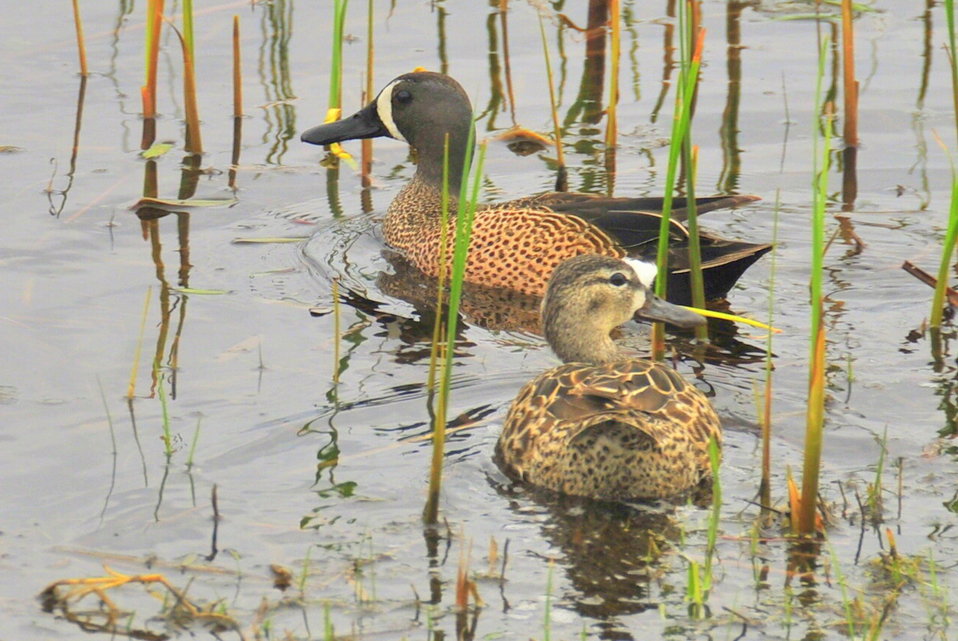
Blue-winged teal pair Sand Lake National Wildlife Refuge

A pair of blue-winged teal at Sand Lake NWR.